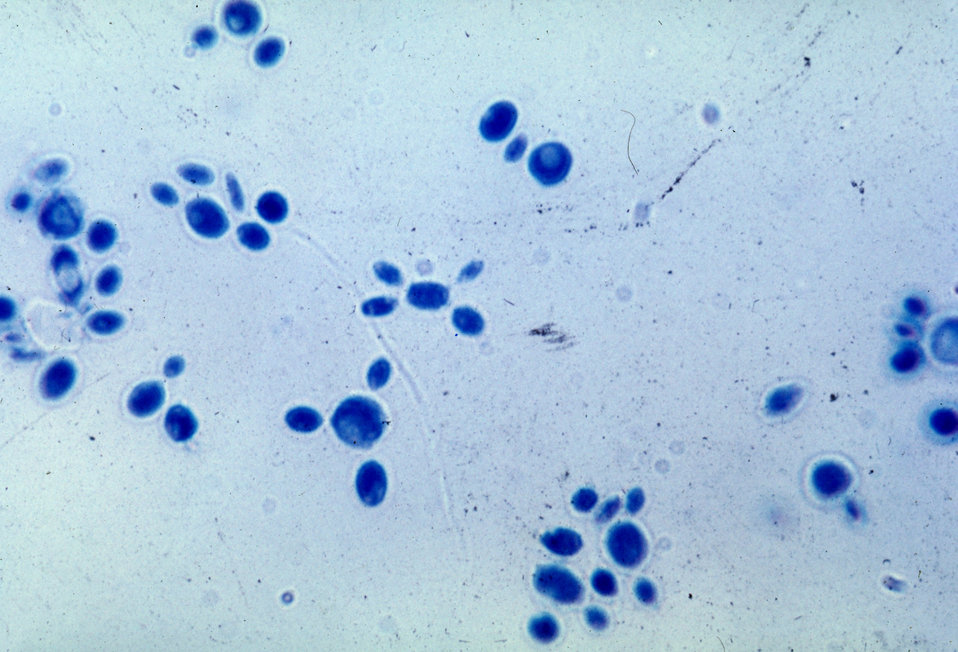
This micrograph is taken from a slant culture of Sporothrix schenckii during its yeast phase.